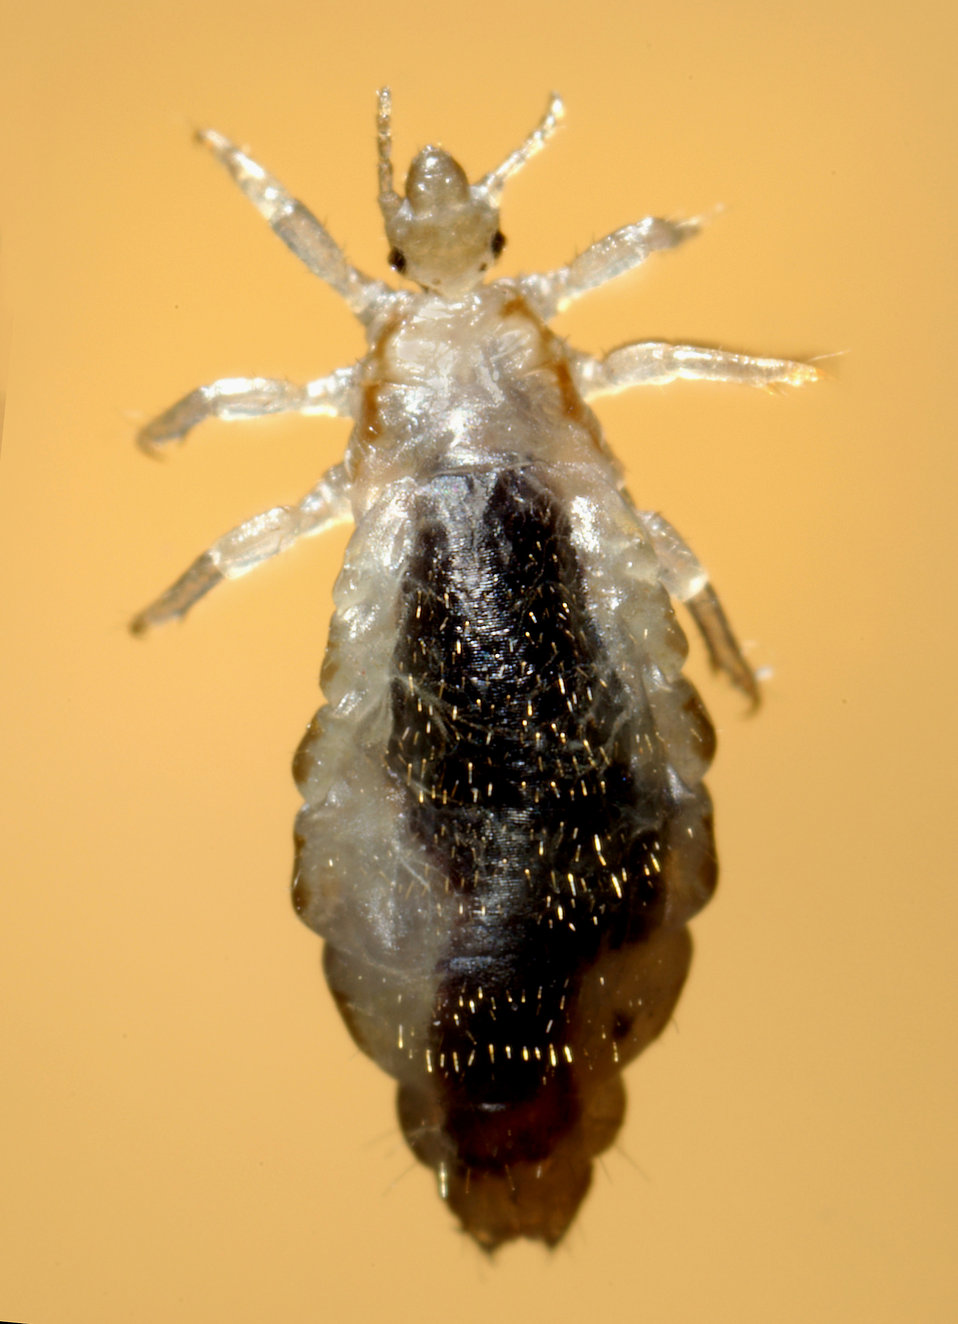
This 2006 photograph depicted a dorsal view of a female body louse, Pediculus humanus var. corporis. Some of the external morphologic features displayed by members of the genus Pediculus include an elongated abdominal region without any processes, and three pairs of legs, which are all equal in length and width.Body lice are parasitic insects that live on the body, and in the clothing or bedding of infested humans. Infestation is common, found worldwide, and affects people of all races. Body lice infestations spread rapidly under crowded conditions where hygiene is poor, and there is frequent contact among people. Note the sensorial setae, or hairs that cover the louse's body, which pick up, and transmit information to the insect about changes in its environment such as temperature, and chemical queues. The dark mass inside the abdomen is a previously ingested blood meal.